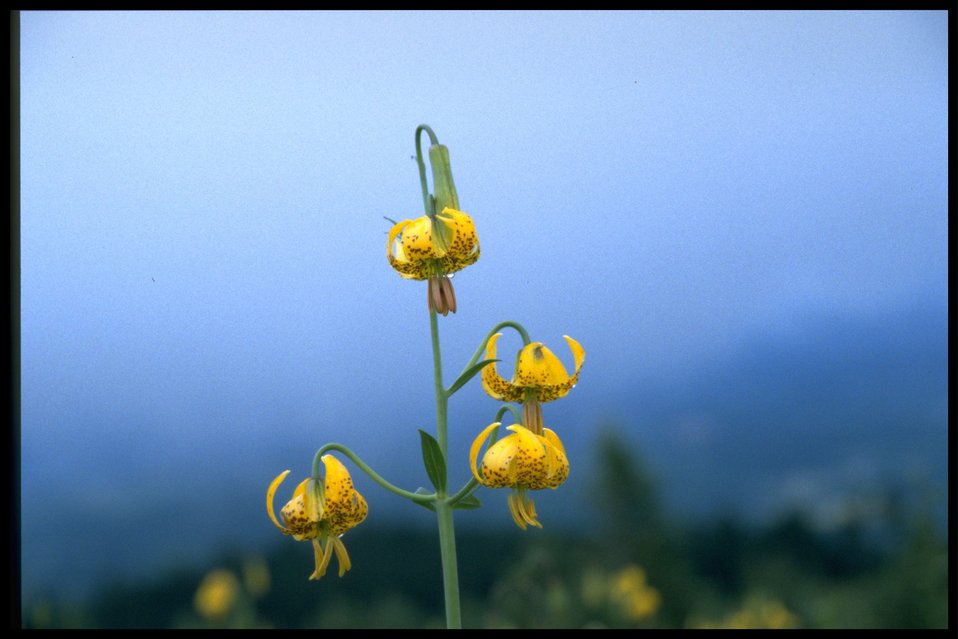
Medium shot of tiger lily, Lilium columbianum.